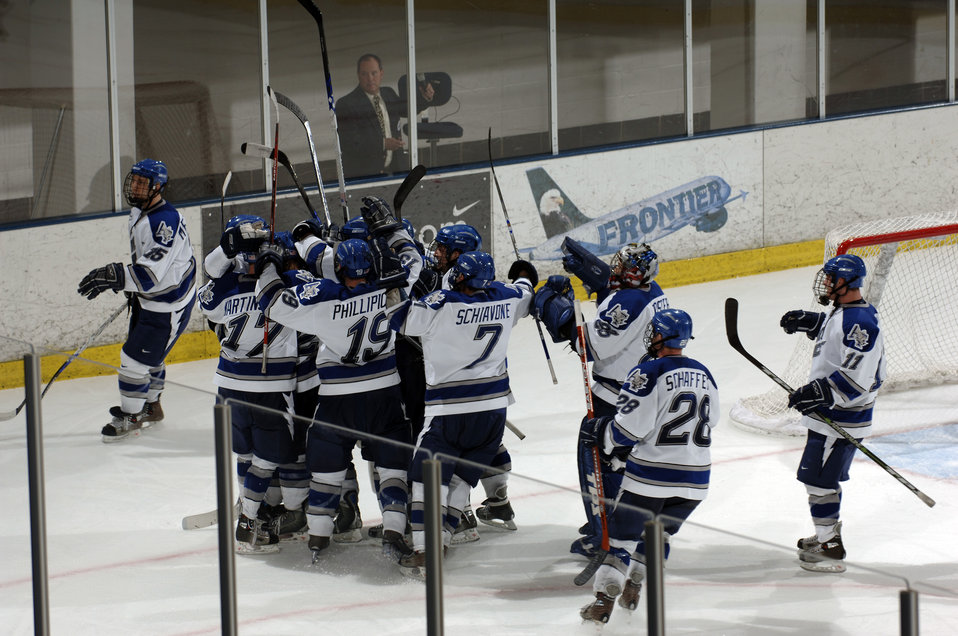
Air Force blanks Holy Cross, 3-0

The Air Force Falcons rush the ice to congratulate goaltender Ben Worker (hidden among all the white jerseys) as AFA beat Holy Cross, 3-0, in the quarterfinals of the Atlantic Hockey Association Tournament.